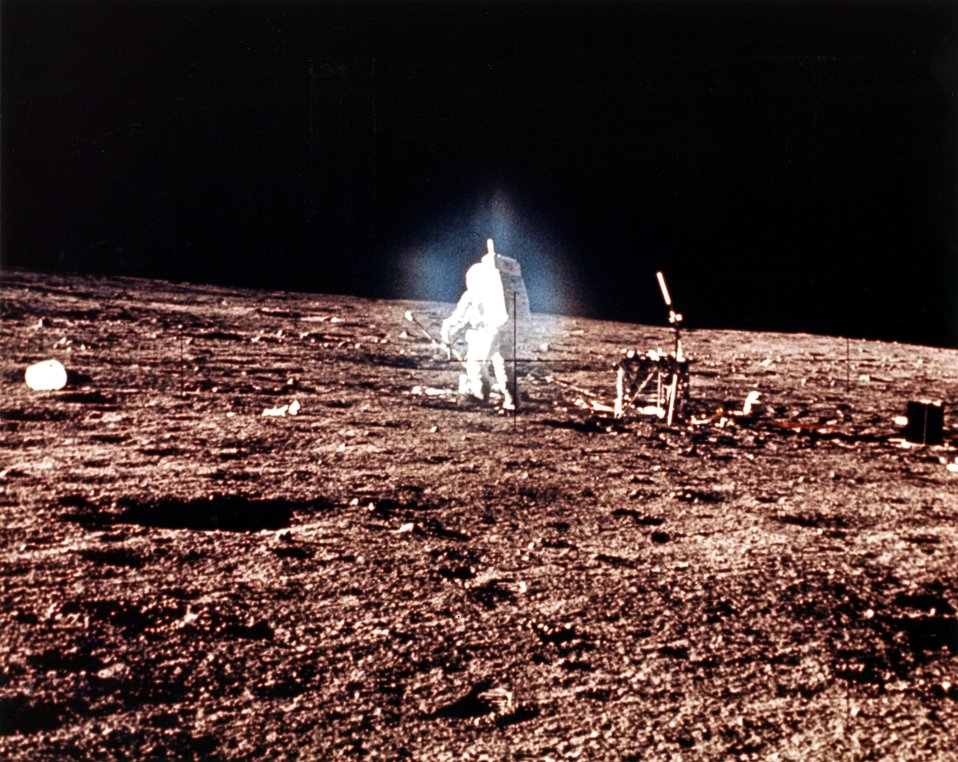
Nuclear electric power arrived on the moon for the first time on November 19, 1969, when the Apollo 12 astronauts -- Charles (Pete) Conrad and Gordon Bean -- developed the AEC's SNAP-27 on the lunar surface to provide power for the six experiments and the transmission data of the ALSEP (Apollo Lunar Surface Experiments Package).